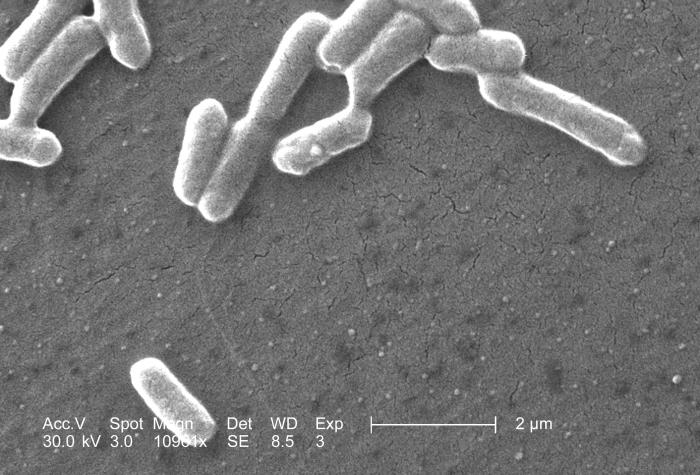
Under a magnification of 10961x, this scanning electron micrograph (SEM) depicted a number of Gram-negative Escherichia coli bacteria of the strain O157:H7, which is one of the hundreds of strains of this bacterium. Although most strains are harmless, and live in the intestines of healthy humans and animals, this strain produces a powerful toxin, which can cause severe illness.E. coli O157:H7 was first recognized as a cause of illness in 1982 during an outbreak of severe bloody diarrhea; the outbreak was traced to contaminated hamburgers. Since then, most infections have come from eating undercooked ground beef.The combination of letters and numbers in the name of the bacterium refers to the specific markers found on its surface, which distinguishes it from other types of E. coli.